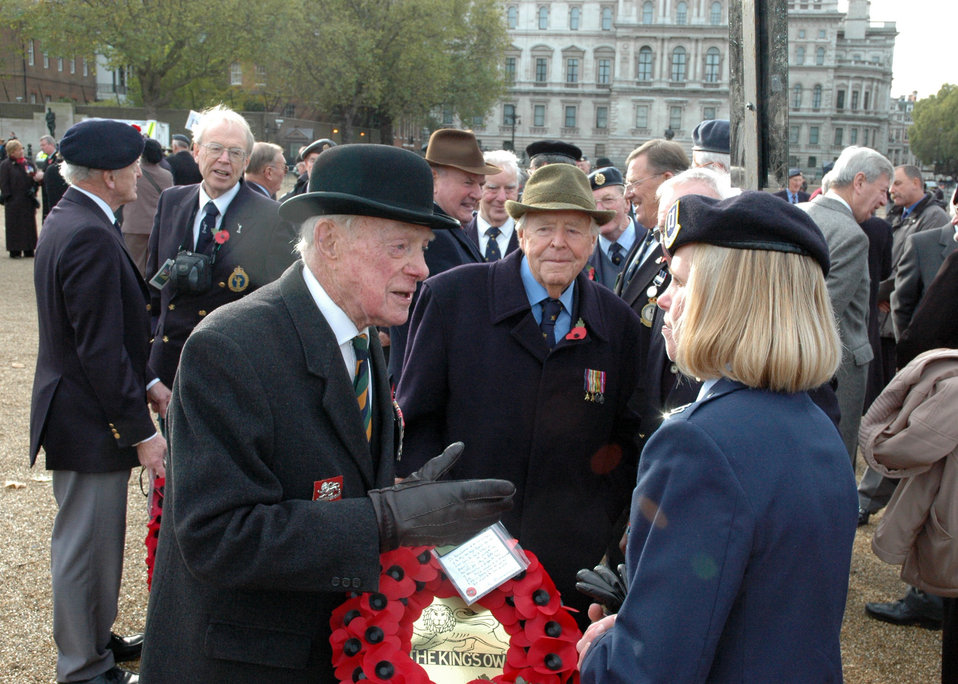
Remembrance Day Parade

Retired Maj. Gen. Nigel Gribbon of the RAF Habbaniya Association speaks to Capt. Jutta Cortes at the annual Remembrance Day Parade outside of the Royal Horseguard in London. The two discussed the history of the RAF base in Iraq, where Captain Cortes performed a Remembrance Day Ceremony last year to honor the British military and civilians buried there.